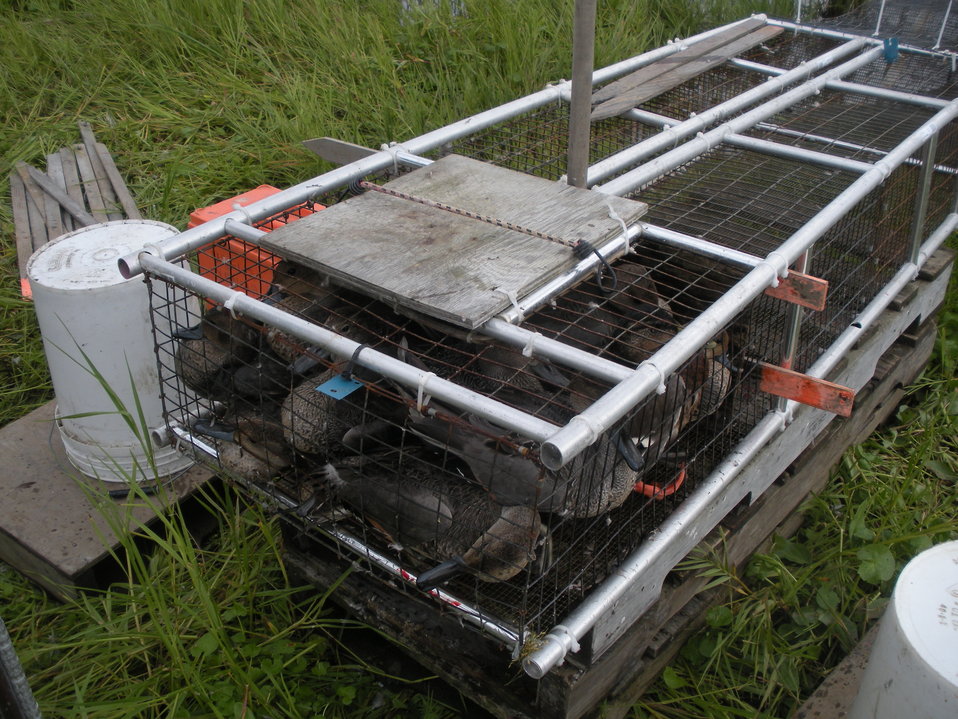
Birds to be banded

Birds captured in the swim-in trap are pushed from the water into a catch box.

USFWS Yukon Delta NWR